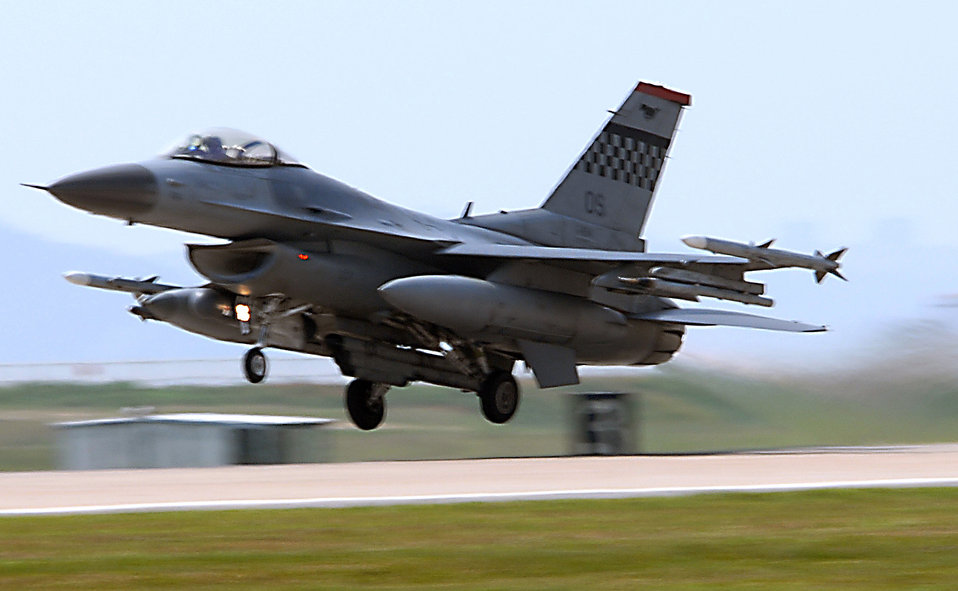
Max Thunder 09-01

A U.S. Air Force F-16 Fighting Falcon from the 36th Fighter Squadron at Osan Air Base, Republic of Korea, takes off from Kunsan AB, Republic of Korea, May 11 for a training mission during exercise Max Thunder 09-01. The exercise is a 7th Air Force-designed, bilateral training opportunity that aims to test aircrews' warfighting skills in realistic combat situations that combine both ROKAF and U.S. Air Force flying and maintenance personnel.